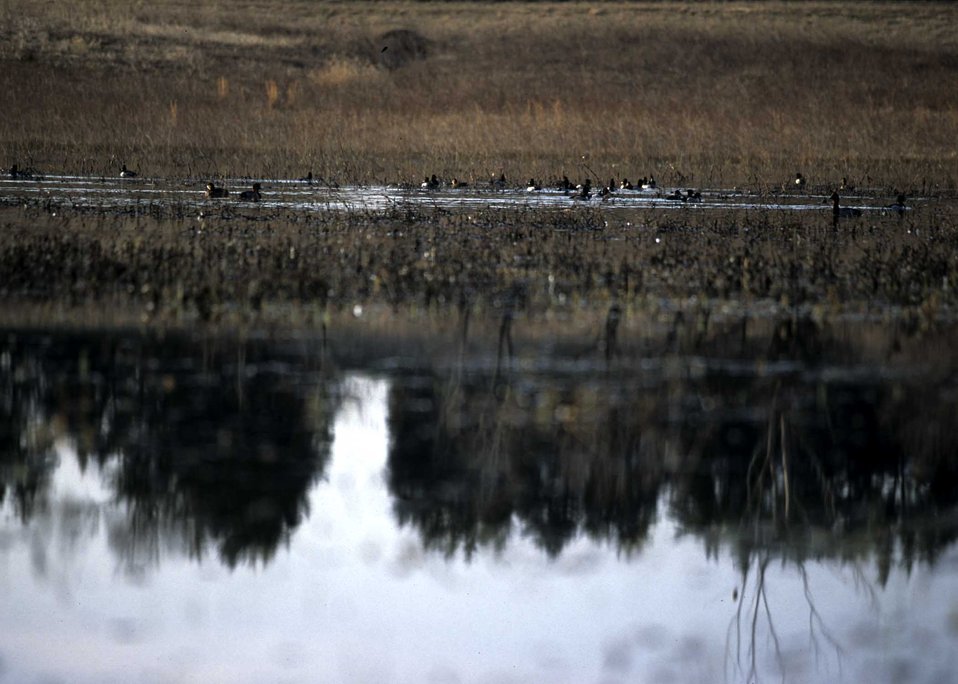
Fall-migrating ducks use habitat in a wetland restored through the Wetlands Reserve Program in Van Buren County, Iowa.